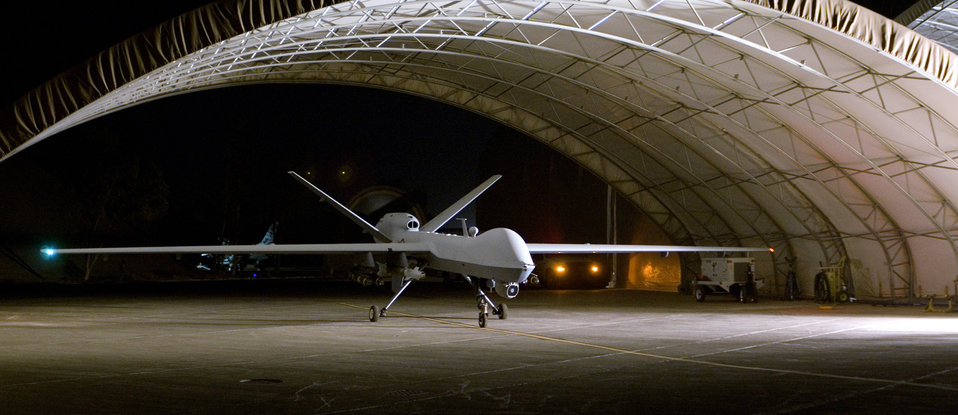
Reaper drops 1st bomb on anti-Iraqi forces

An MQ-9 Reaper remotely piloted aircraft prepares to taxi out of a hangar at Joint Base Balad in Iraq.